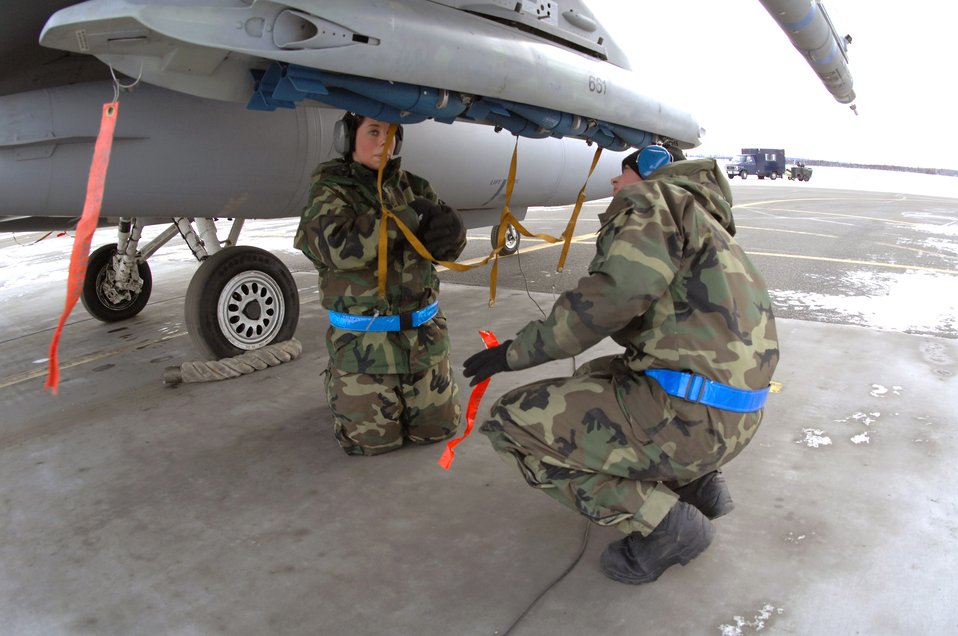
A chilling task

Senior Airman Amanda Debkowski and Airman 1st Class Justin Hendrick prep an F-16 Fighting Falcon Feb. 8 at Eielson Air Force Base, Alaska. The 354th Maintenance Squadron Airmen are responsible for arming all weapons and making sure aircraft are ready for flight. The 18th Fighter Squadron conducts air operations for combat-ready F-16 aircraft and provides close-air support, forward air control, battlefield air interdiction, and offensive counter air.